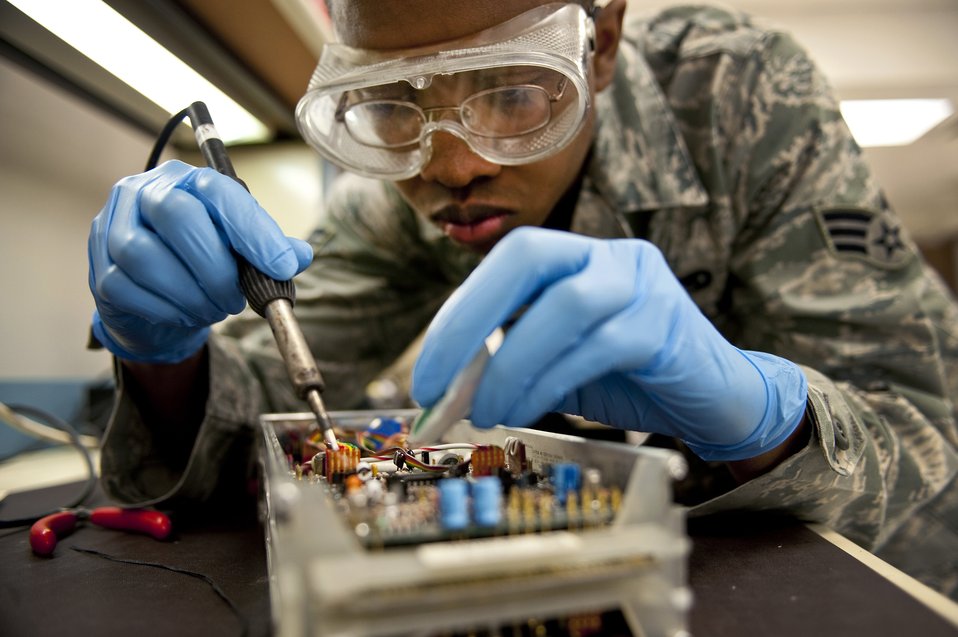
An eye for detail

Senior Airman Mathew Harrington performs maintenance on an oscilloscope calibration unit April 5, 2011, at Nellis Air Force Base, Nev. Airman Harrington is a precision measurement equipment laboratory journeyman assigned to the 57th Maintenance Squadron.